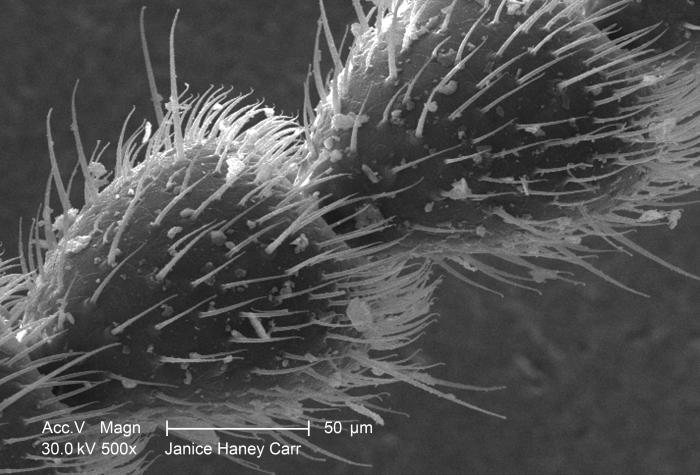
Under a low magnification of 500X, this scanning electron micrograph (SEM) revealed some of the ultrastructural morphology found on the surface of an antenna situated on the head region of a termite found in Atlanta, Georgia.